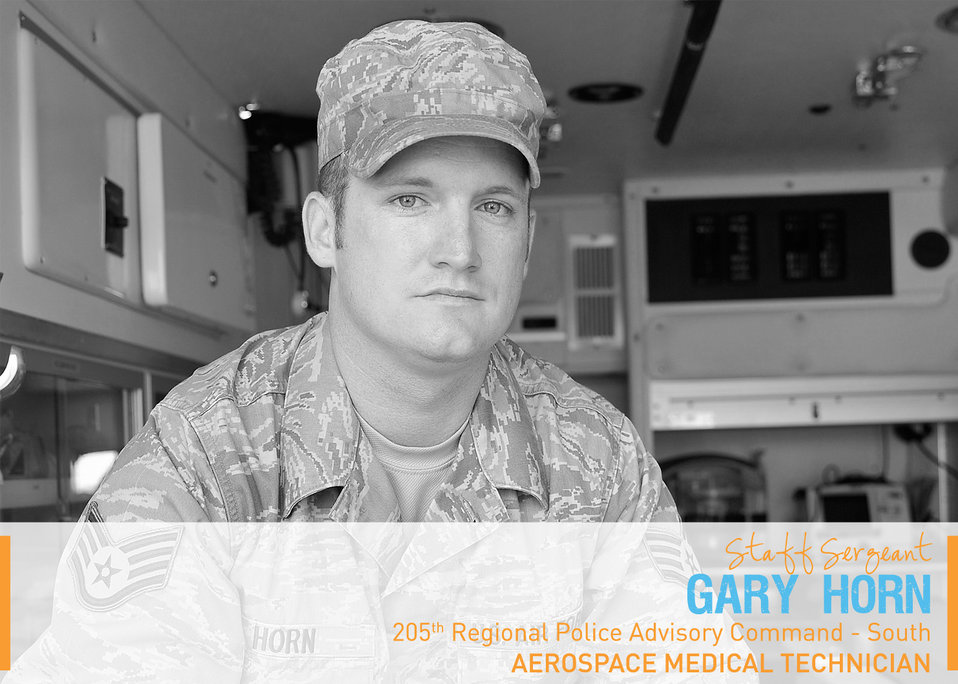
Portraits in Courage 4: Staff Sgt. Gary Horn, aerospace medical technician, 205th Regional Police Advisory Command-South. He was part of a police mentor team with the Afghan National Police training them on battlefield medicine. When the team truck was hit by an improved explosive device, he provided essential first aid to save the lives of two wounded policemen.